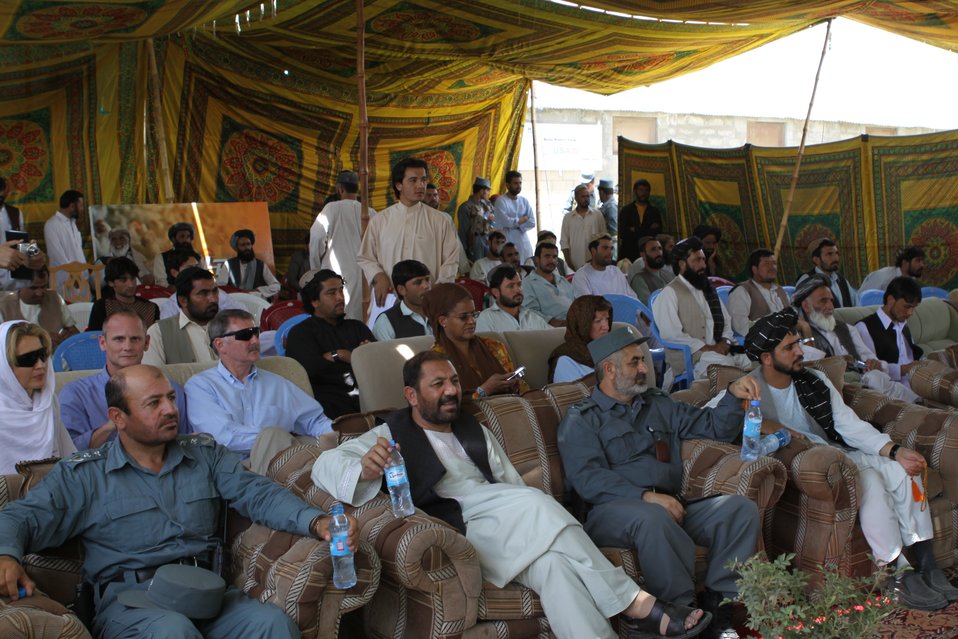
Bolan Poultry Farm